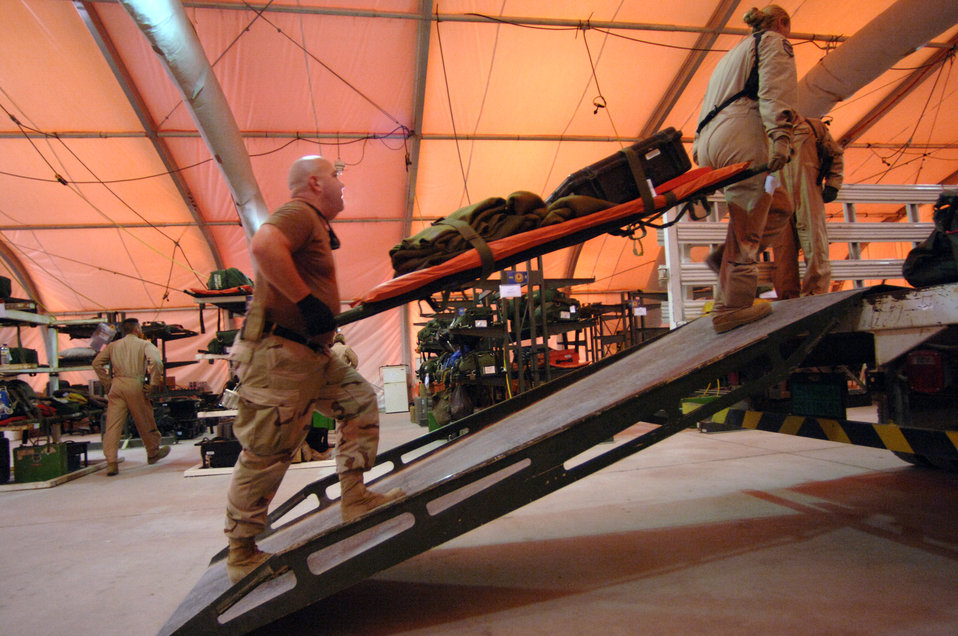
Aeromedical maneuvers

Prior to an evacuation mission over Southwest Asia, nurses and medics with the 379th Expeditionary Aeromedical Evacuation Squadron load medical equipment onto a C-130 Hercules that will serve as a